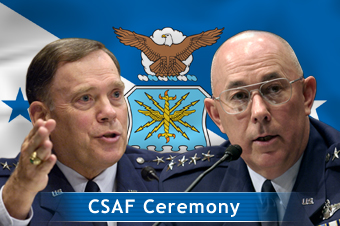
GRAPHIC -- The retirement of Air Force Chief of Staff Gen. John P. Jumper (left) and the swearing in of Gen. T. Michael Moseley as the new chief of staff can be seen live Sept. 2 on the Pentagon Channel and on Air Force Link.